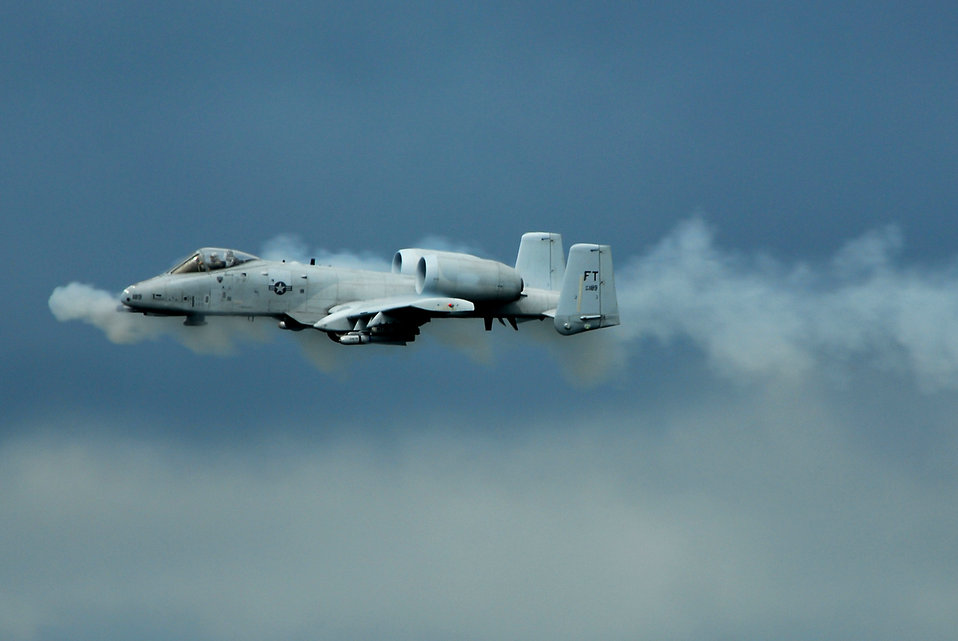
Combat search and rescue training

An A-10 Thunderbolt II ground attack aircraft performs a low-level strafing run with its 30 mm cannon during a combat search and rescue demonstration at Moody Air Force Base, Ga., Oct. 4. The digitally upgraded A-10 has been equipped with satellite-guided precision weaponry and advanced communications data links for transferring information with ground-based warfighters.